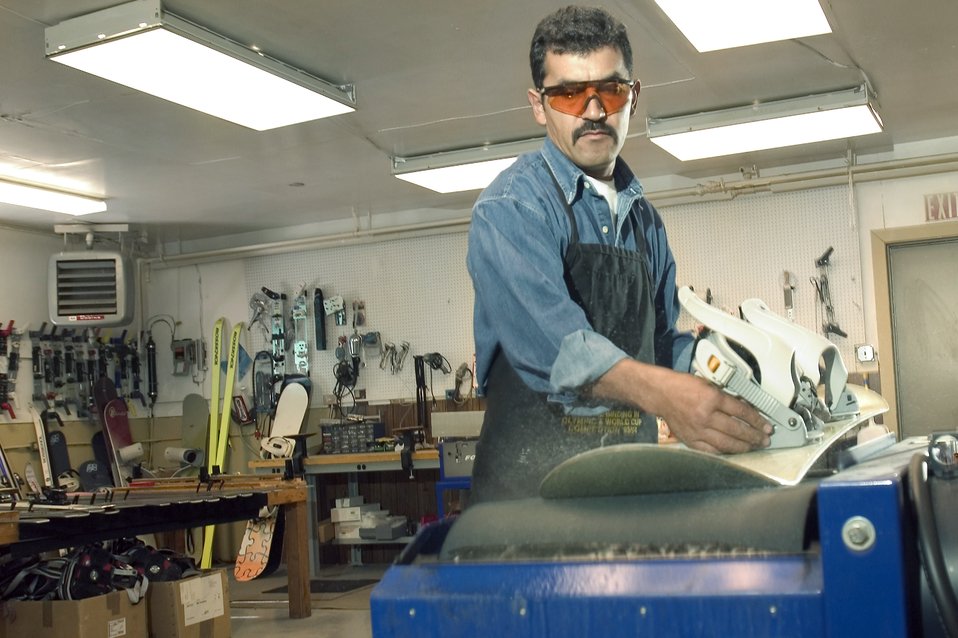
Mountain Home 'maintainer' readies skis for season

MOUNTAIN HOME AIR FORCE BASE, Idaho -- Raul Hernandez uses a wet-belt sander to smooth the bottom of a snowboard. The base's only certified ski-equipment maintainer cares for more than 600 pairs of skis, 100 snowboards and countless cross-country skis, snowshoes and sleds at the base outdoor recreation supply office.